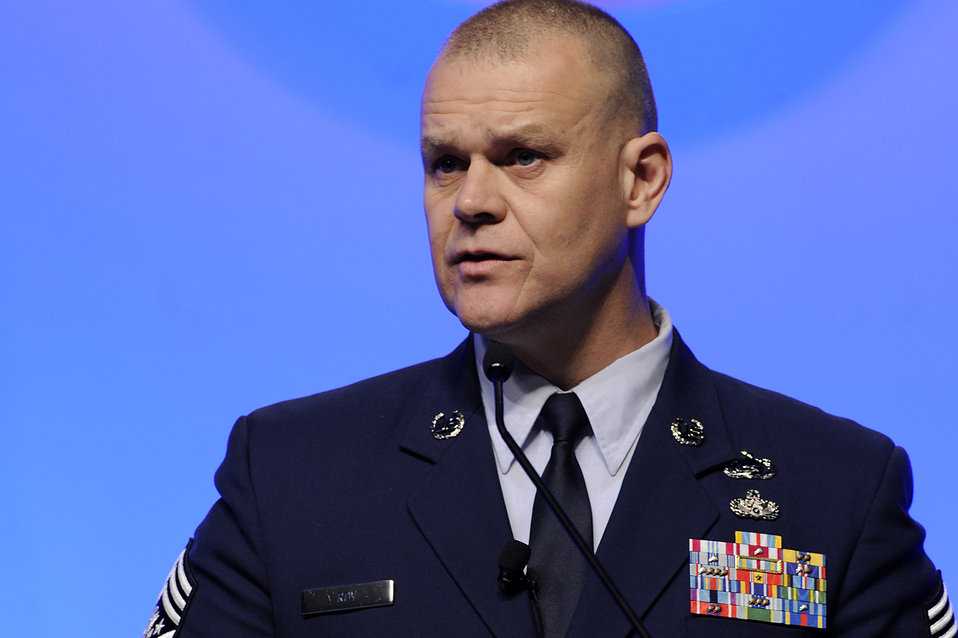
CMSAF discusses need for strengthened resiliency at symposium

Chief Master Sgt. of the Air Force James Roy speaks Feb. 17, 2011, in Orlando, Fla., during the Air Force Association's 2011 Air Warfare Symposium and Technologies Exposition. Chief Roy spoke about building resiliency in Airmen and their families.